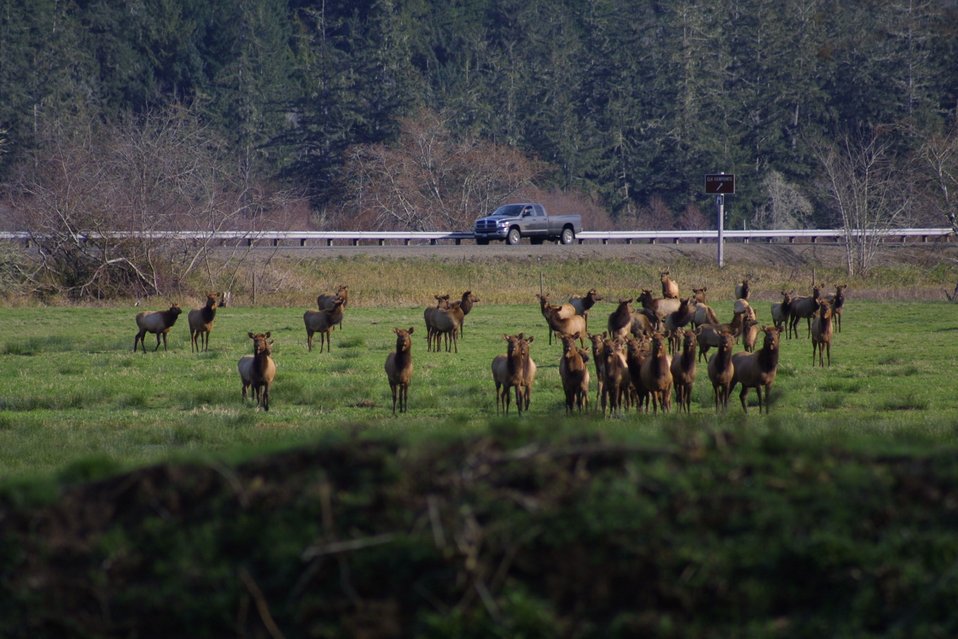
Elk at the Dean Creek Watchable Wildlife site near Reedsport, Oregon.